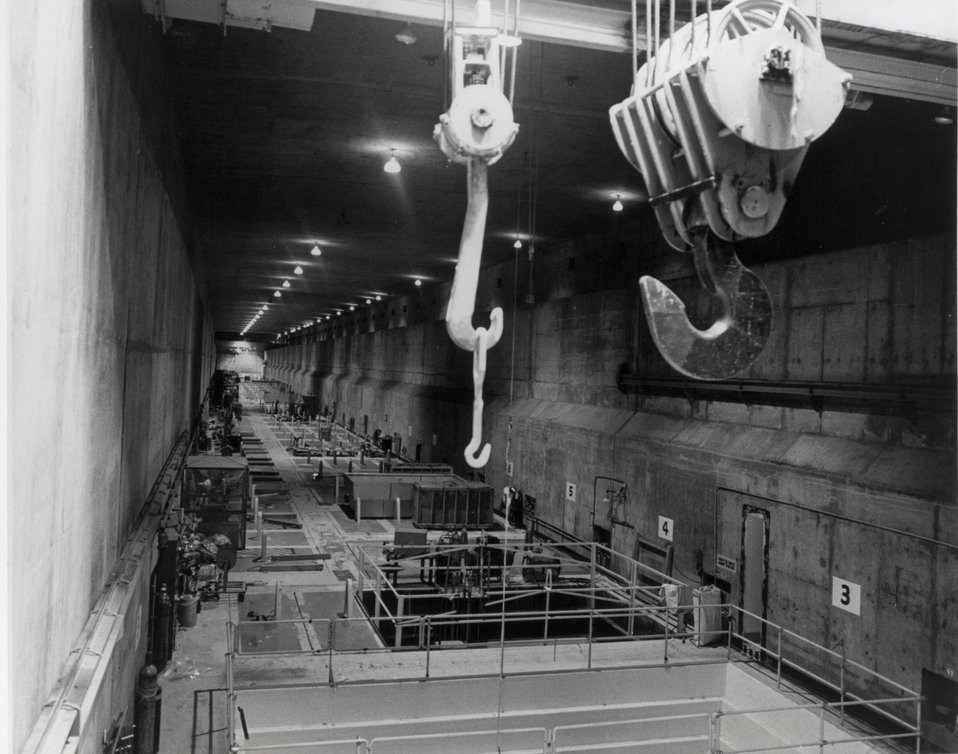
Looking the length of the 800-foot long canyon portion of the B Plant waste fractionization facility at the Energy Research and Development Administration's Hanford complex. Circa 1975.